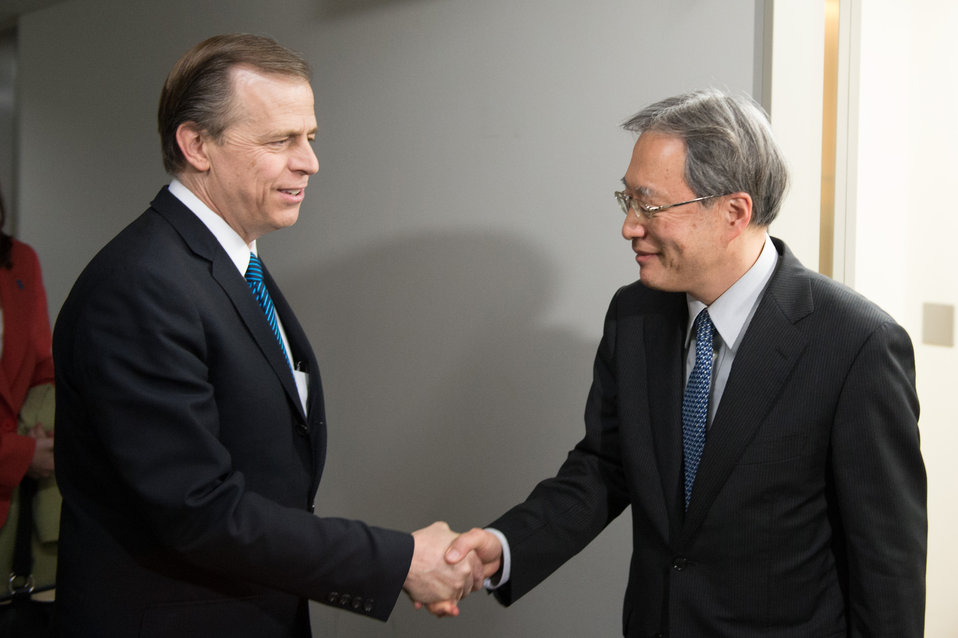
Special Representative Davies Meeting at Japan’s Foreign Ministry

Special Representative for North Korea Policy Glyn Davies is greeted by Junichi Ihara, Director-General of the Asian and Oceanian Affairs Bureau at the Japanese Ministry of Foreign Affairs, before their meeting in Tokyo, Japan, on January 30, 2014.